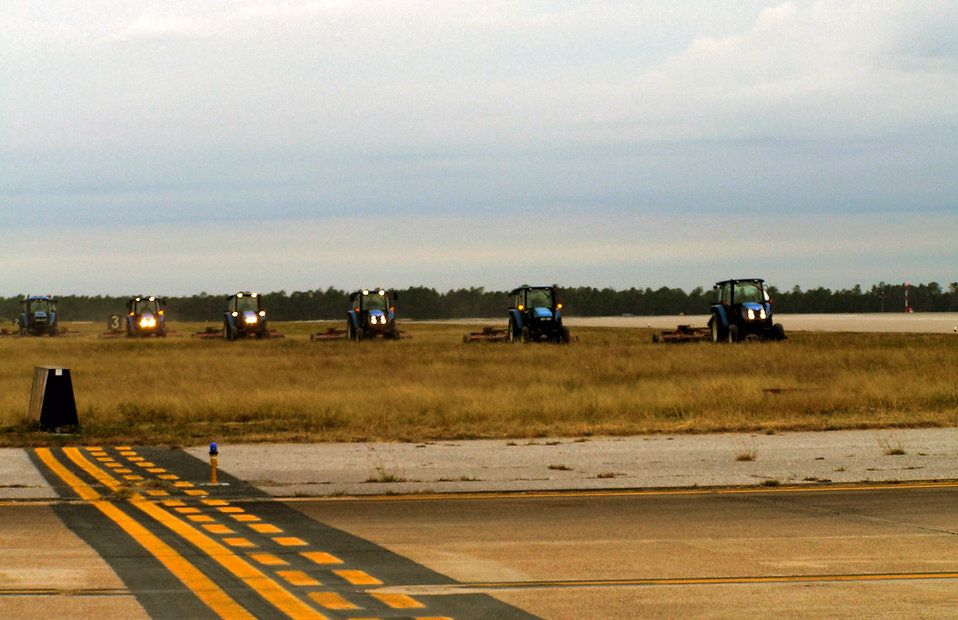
Air Force works aggressively to reduce bird strikes

Officials credit monitoring grass height around runways with helping to deter birds that prevent a hazard to aircraft operations. Here, mowers at Eglin Air Force Base, Fla., ensure grass around the runway is more than 7 inches high, because birds are less likely to land somewhere if they can't see each other.